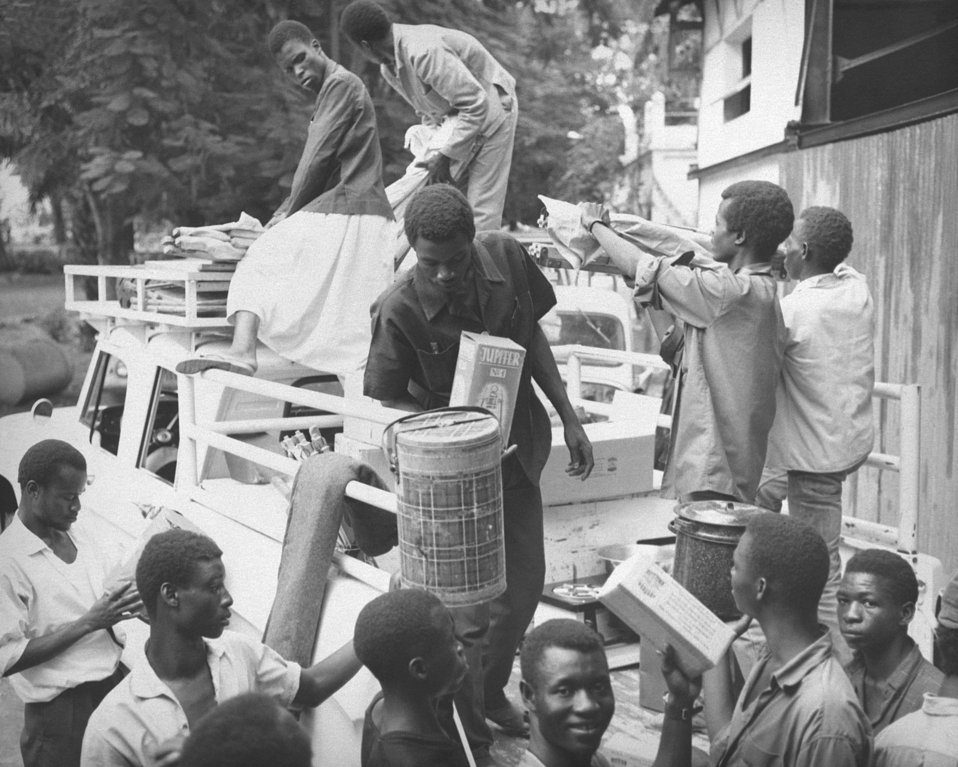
These were prospection team participants were assisting in Mali's Smallpox Eradication efforts during the late 1960s.